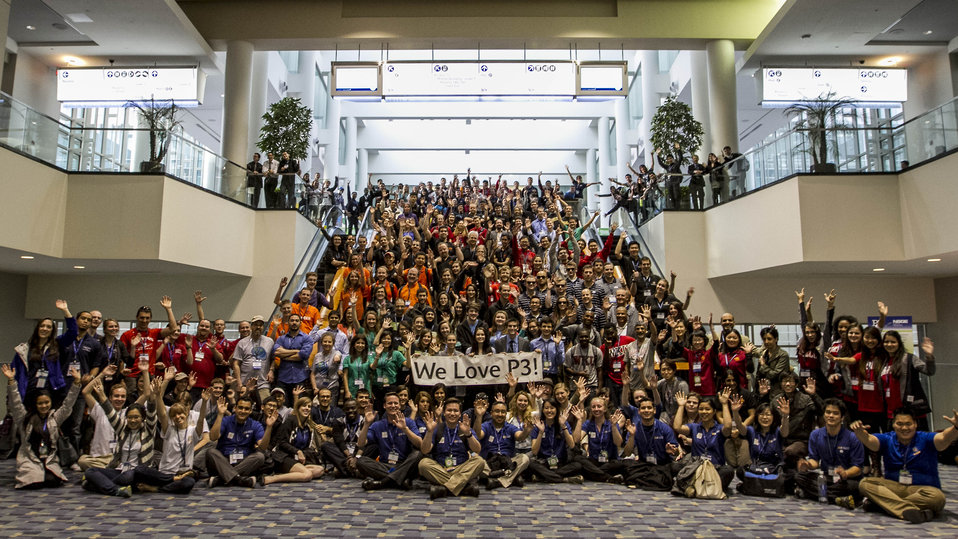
2014 P3 Competition

The 2014 Class of EPA P3 Teams